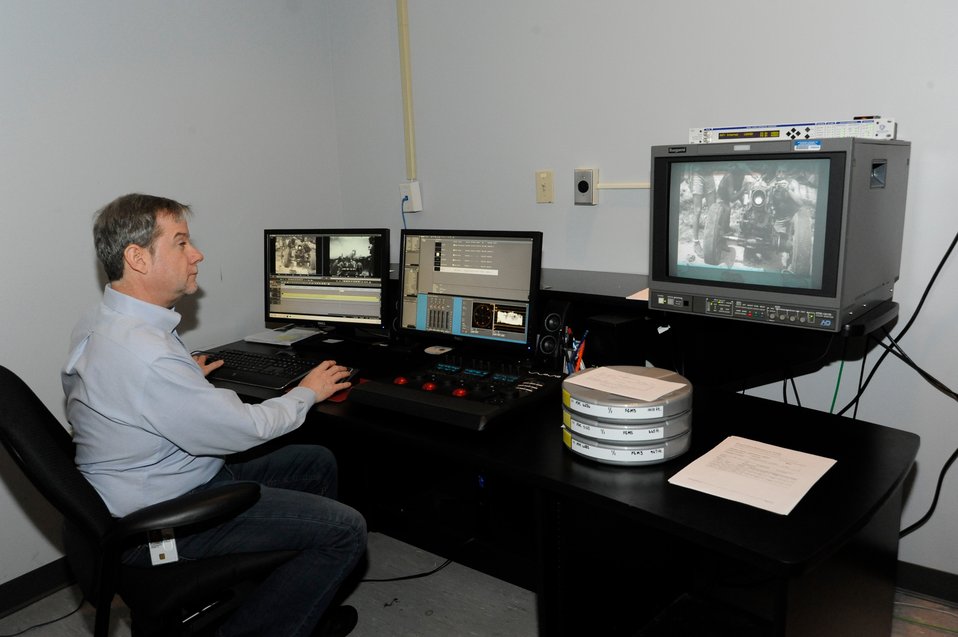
Harry Snodgrass uses a non-linear editing system to prepare an HD transfer of 35mm film for transcode to access files.; Location: Archives 2 - Motion Picture Preservation Lab, College Park, MD